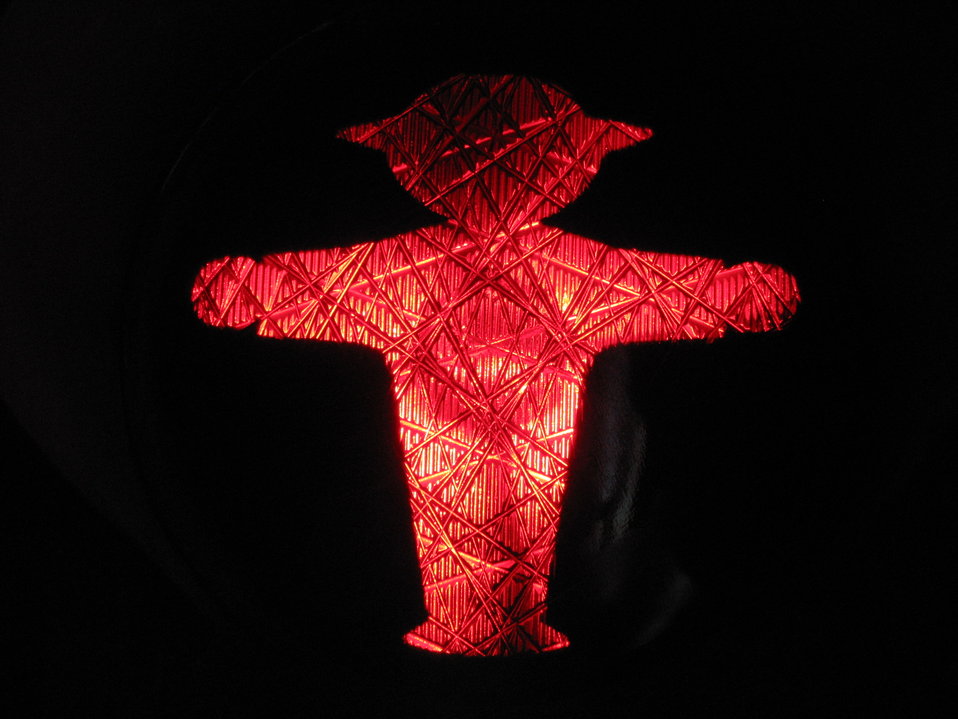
Ampelmännchen - traffic light ('STOP') at pedestrian crossings in Berlin Deutsch: Ampelmännchen ('stehen') in Berlin